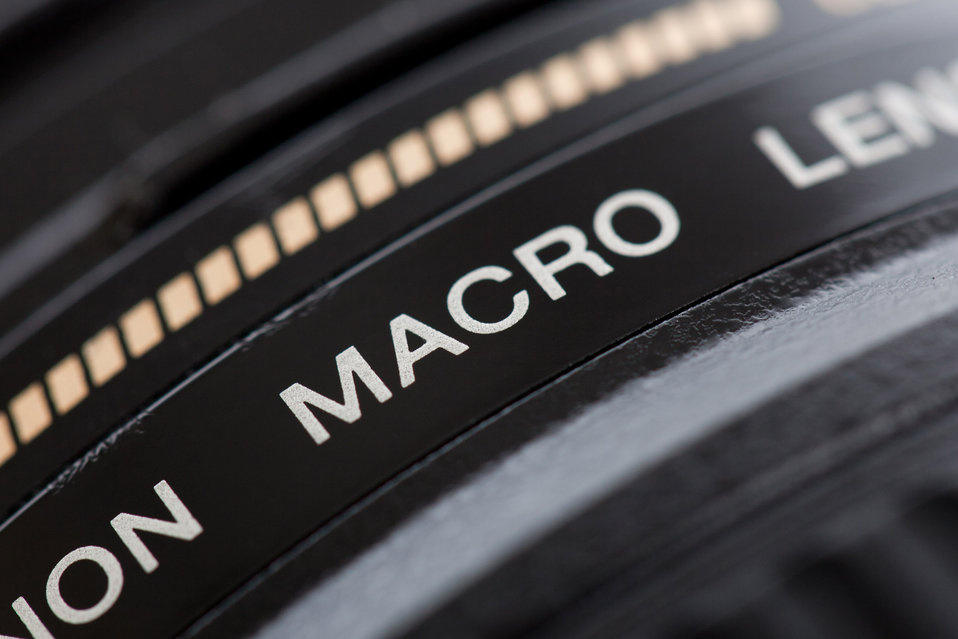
Macro text on macro lens.